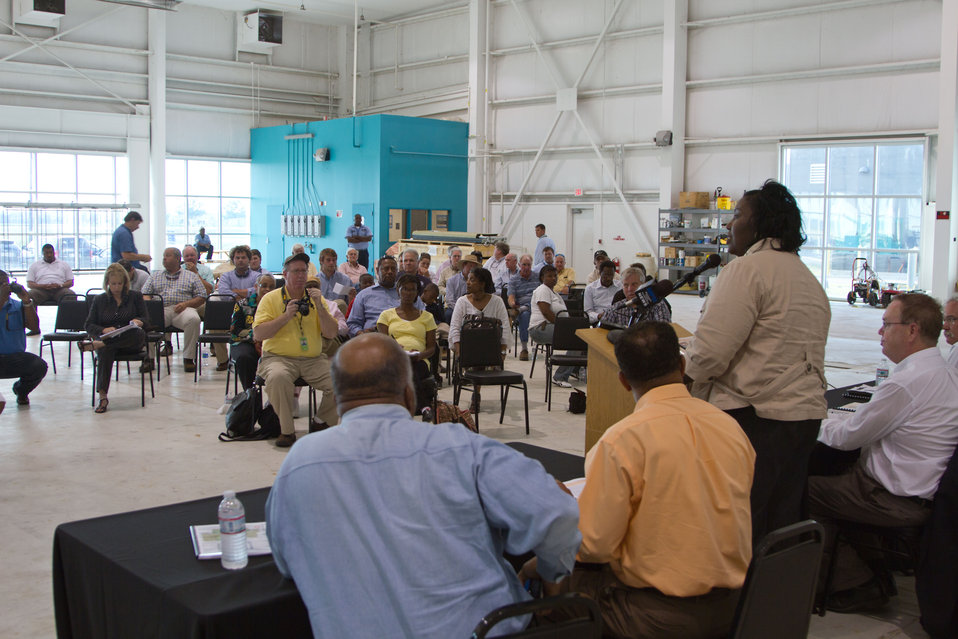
U.S. Department of Agriculture Mississippi Rural Development State Director Trina N. George addresses the gathered farmers during an outreach event at Tunica Airport in Mississippi on Thursday, May 19, 2011. Hosting the event was Congressman Bennie Thompson (left); also there to support the farmers were Under Secretary for Rural Development Dallas Tonsager (second from right); Acting Under Secretary Farm and Foreign Agriculture Service Michael Scuse (right); and other government officials that were available to answer questions and assist people in getting help is available to them.